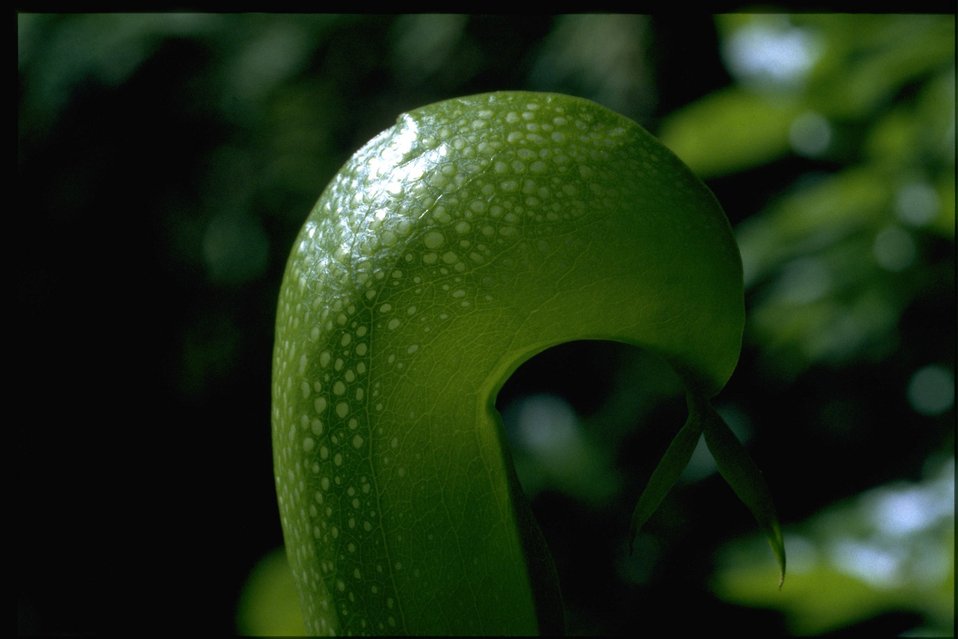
Closeup shot of Cobra Lily, Darlingtonia californica.